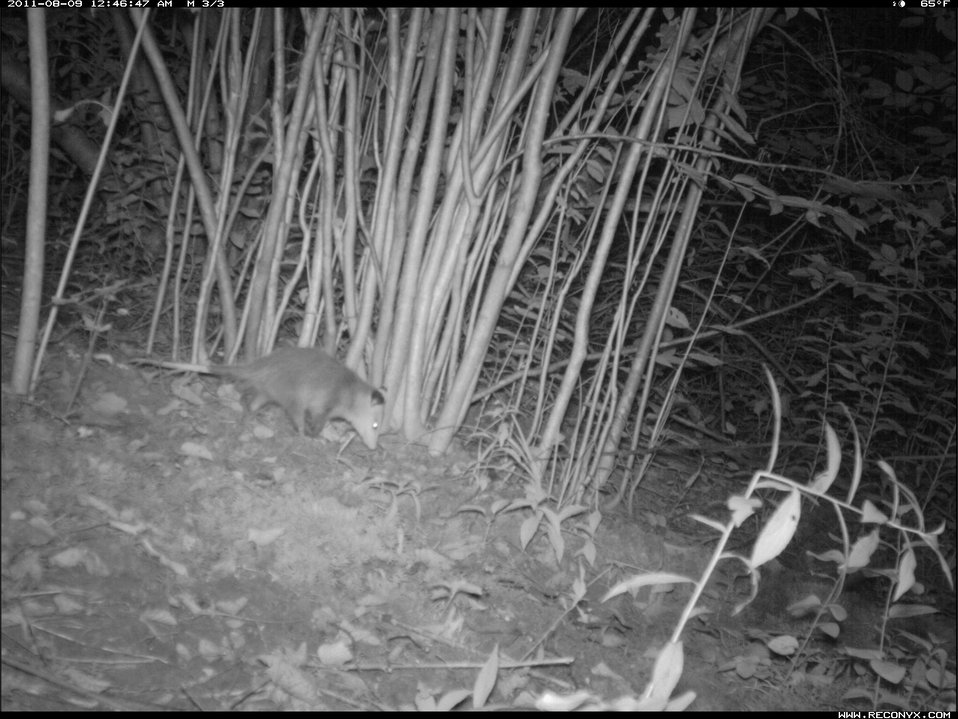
Opossum